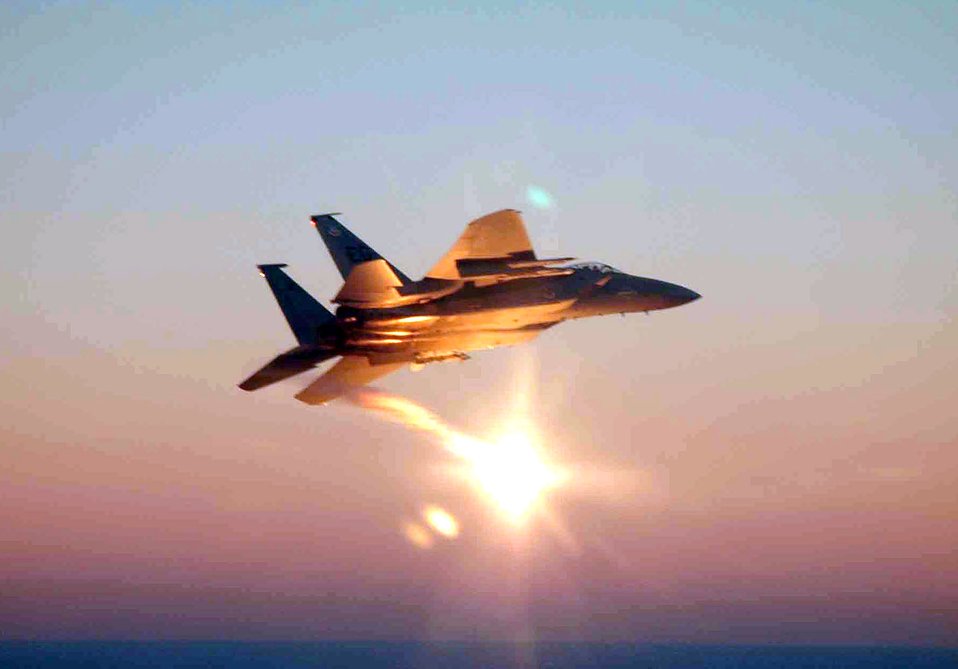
OPERATION NOBLE EAGLE (AFPN) -- An F-15C Eagle shoots off flares during a training mission Feb. 7. The flares alert civilian aircraft that they are in restricted airspace. The 33rd Fighter Wing has been supporting Operation Noble Eagle since Sept. 11, 2001,